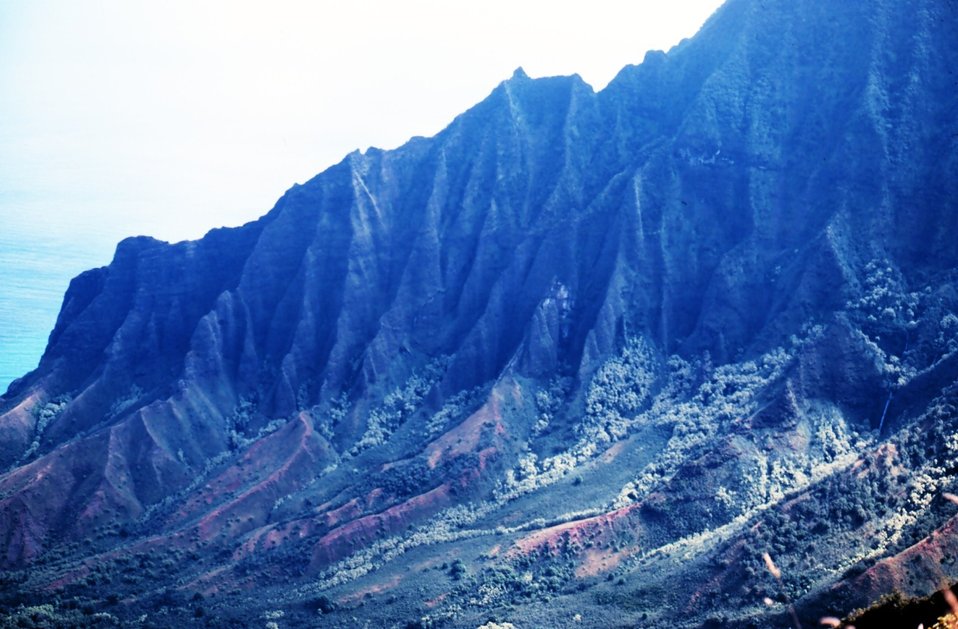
A knife-edge ridge on Kauai on the Na Pali coast. The ridge looms over the Kalalau Valley.